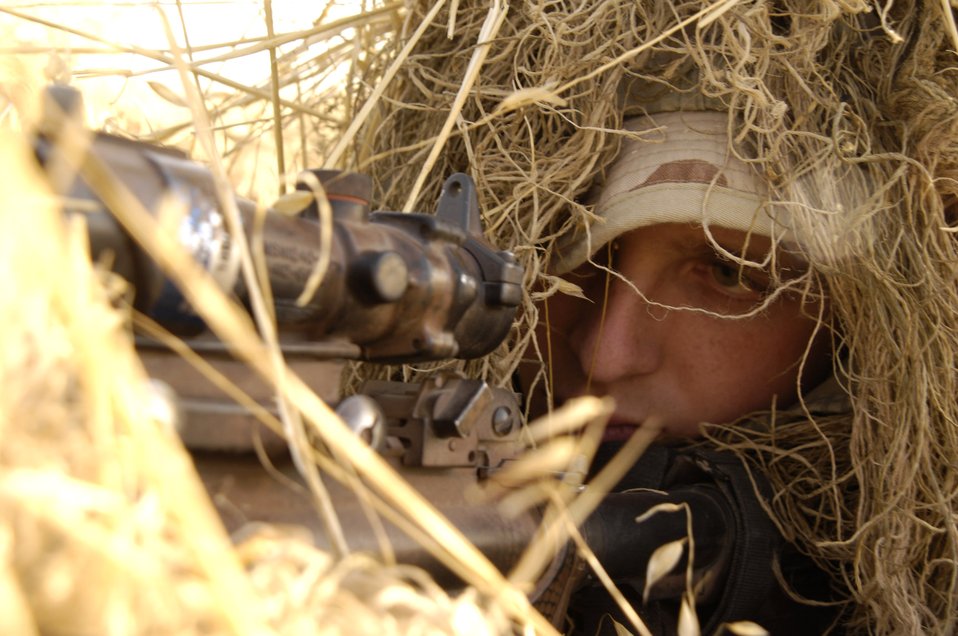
Sniper training

Airman 1st Class Matt Leeper demonstrates how camouflaged gilly suits blend into their surroundings while setting up surveillance for terrorist activity Nov. 14 in Iraq. The 506th Expeditionary Security Forces Squadron at Kirkuk Air Base, Iraq, houses a close precision engagement team of Air Force snipers who train as anti-sniper teams to target terrorist and insurgent snipers attacking U.S. and coalition forces in the area. Airman Leeper is from the 354th Security Forces Squadron at Eielson Air Force Base, Alaska, deployed to Kirkuk Air Base, Iraq, as a member of the 506th Expeditionary Security Forces Squadron.